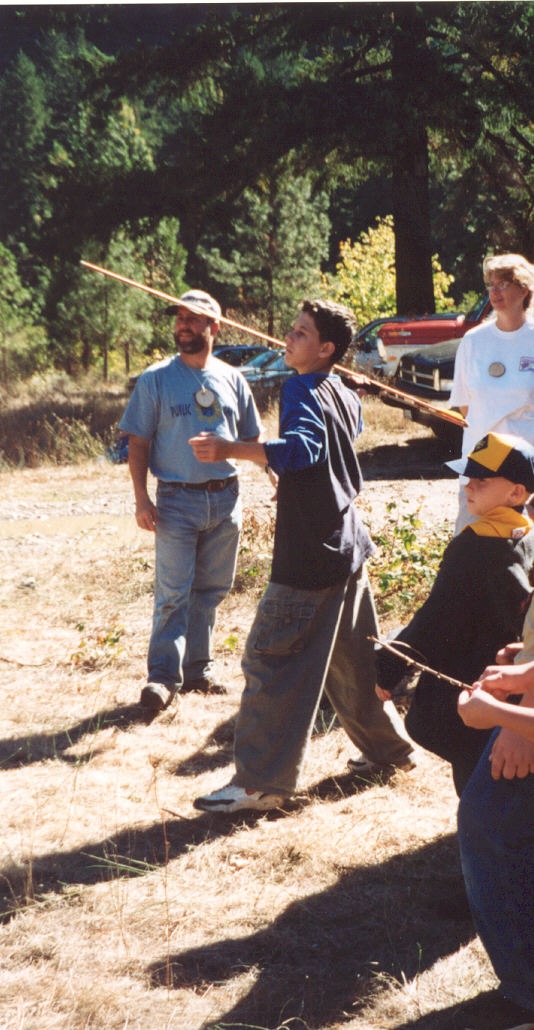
Public Lands Day atlatl throwing.